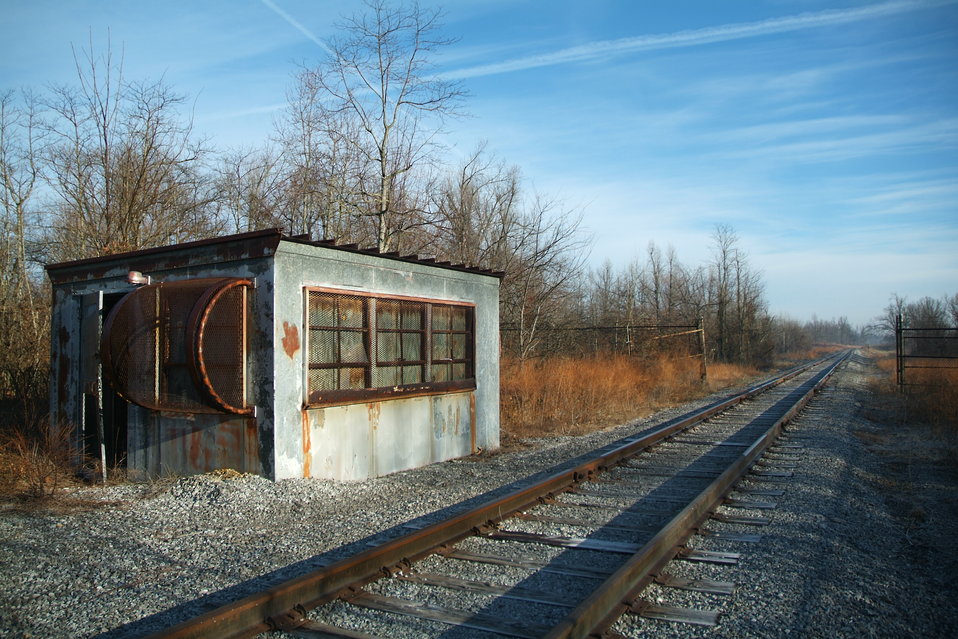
Old Railroad Scale House Removed at DOE’s Paducah Site

This railroad scale house, in West Kentucky Wildlife Management Area east of the Paducah site, was used in the 1950s to weigh Paducah Gaseous Diffusion Plant freight. Workers preserved the old scale because of its potential historical significance. The scale house was demolished.